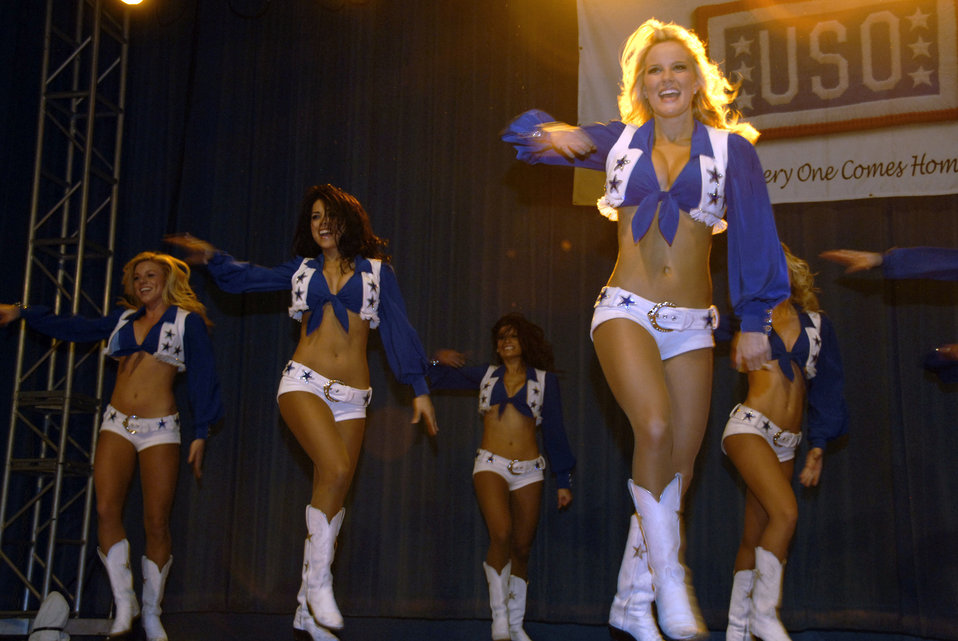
Dallas Cowboys cheerleaders perform Dec. 29, 2010, during a visit to Osan Air Base, South Korea.